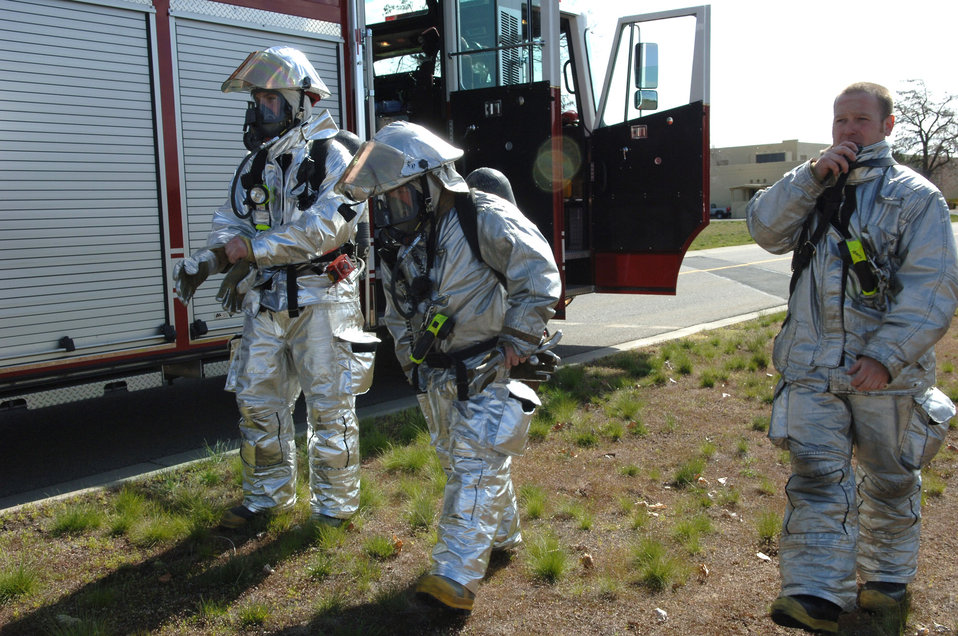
Fairchild puts readiness to the test

Senior Airman Kristopher Doughty, Jason Stacher and John Adams arrive at a simulated disaster area April 19 during an exercise at Fairchild Air Force Base, Wash. The exercise is intended to test the base's ability to respond to a weapon of mass destruction. Airman Doughty, Mr. Stacher and Mr. Adams are all members of the 92nd Civil Engineer Squadron.